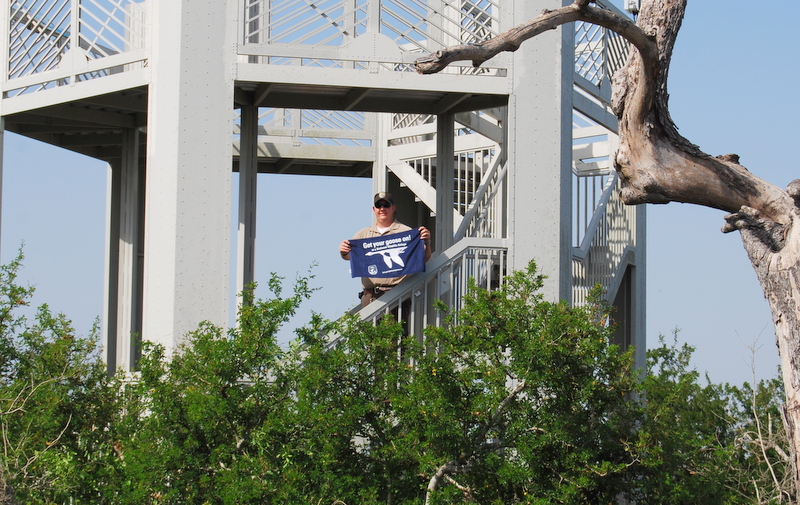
Get Your Goose On!

Photo taken at Santa Ana National Wildlife Refuge in southern Texas.